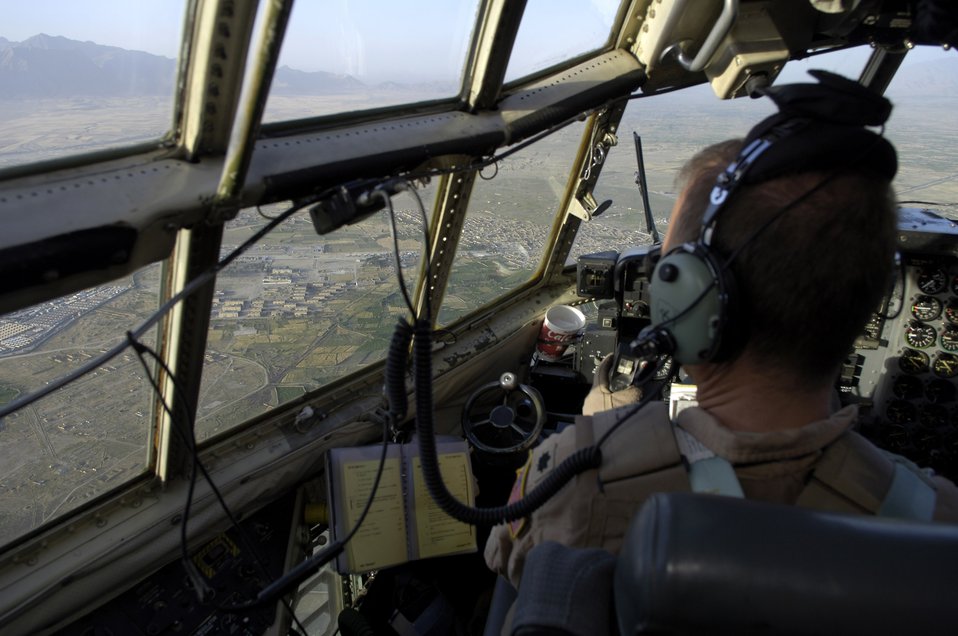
Hercules lifts off

Lt. Col. Bryan Langeberg nears final approach at Forward Operating Base Salerno, Afghanistan, in a C-130 Hercules on Saturday, June 10, 2006. Colonel Langeberg is with the 774th Expeditionary Airlift Squadron. The squadron is the only U.S. C-130 squadron in Afghanistan, and flies approximately five missions a day providing airlift and airdrops to troops in theater.